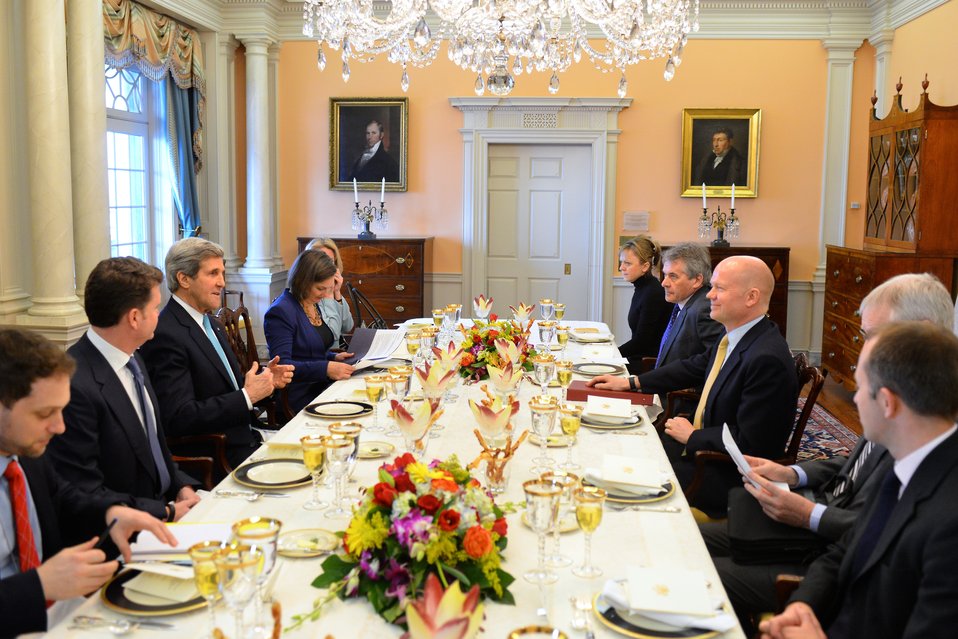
Secretary Kerry Meets With U.K. Foreign Secretary Hague

U.S. Secretary of State John Kerry holds a bilateral meeting with U.K. Secretary of State for Foreign and Commonwealth Affairs William Hague at the U.S. Department of State in Washington, D.C., on February 25, 2014.